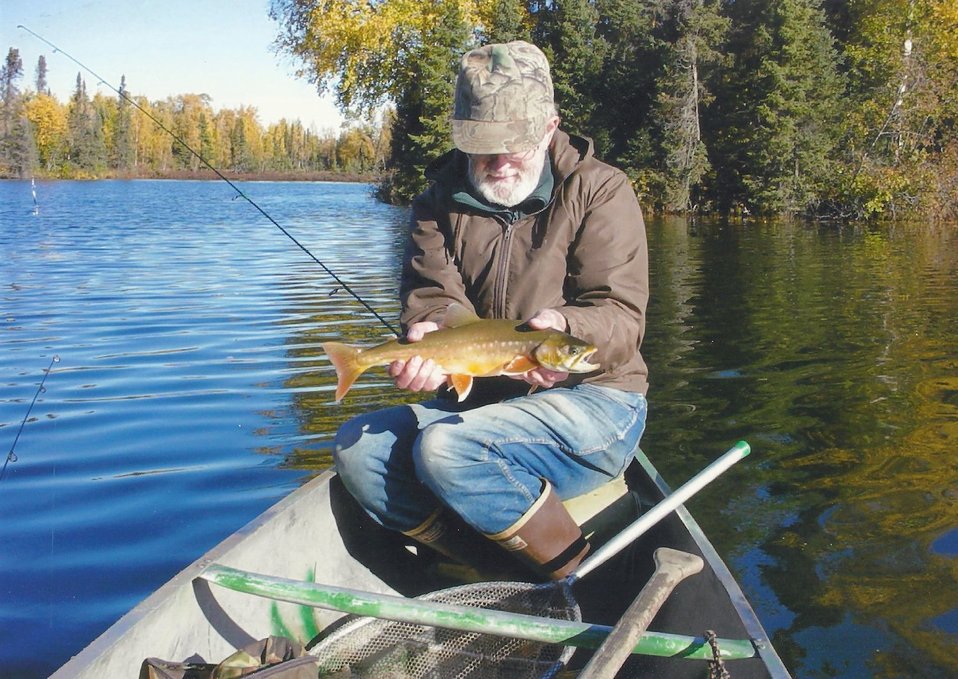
Kenai Refuge

Jack Dean shows off the Arctic char he caught in the Kenai National Wildlife Refuge wilderness.